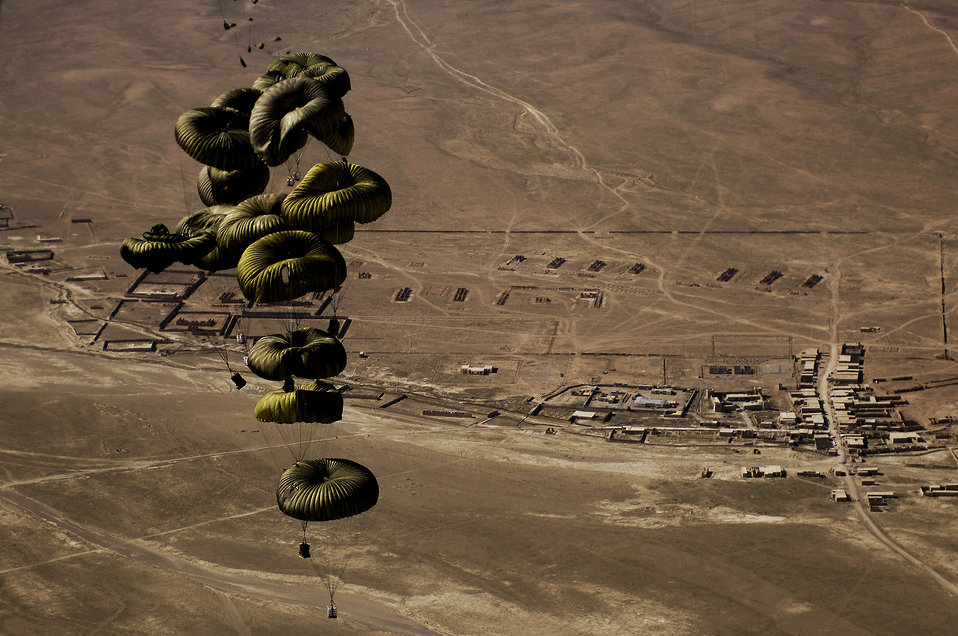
Afghanistan airdrop

Forty bundles of humanitarian supplies are dropped from a C-17 Globemaster III using the Joint Precision Airdrop Delivery System to a drop zone April 13 in Afghanistan. The C-17 aircrew is from the 17th Airlift Squadron from Charleston Air Force Base, S.C.